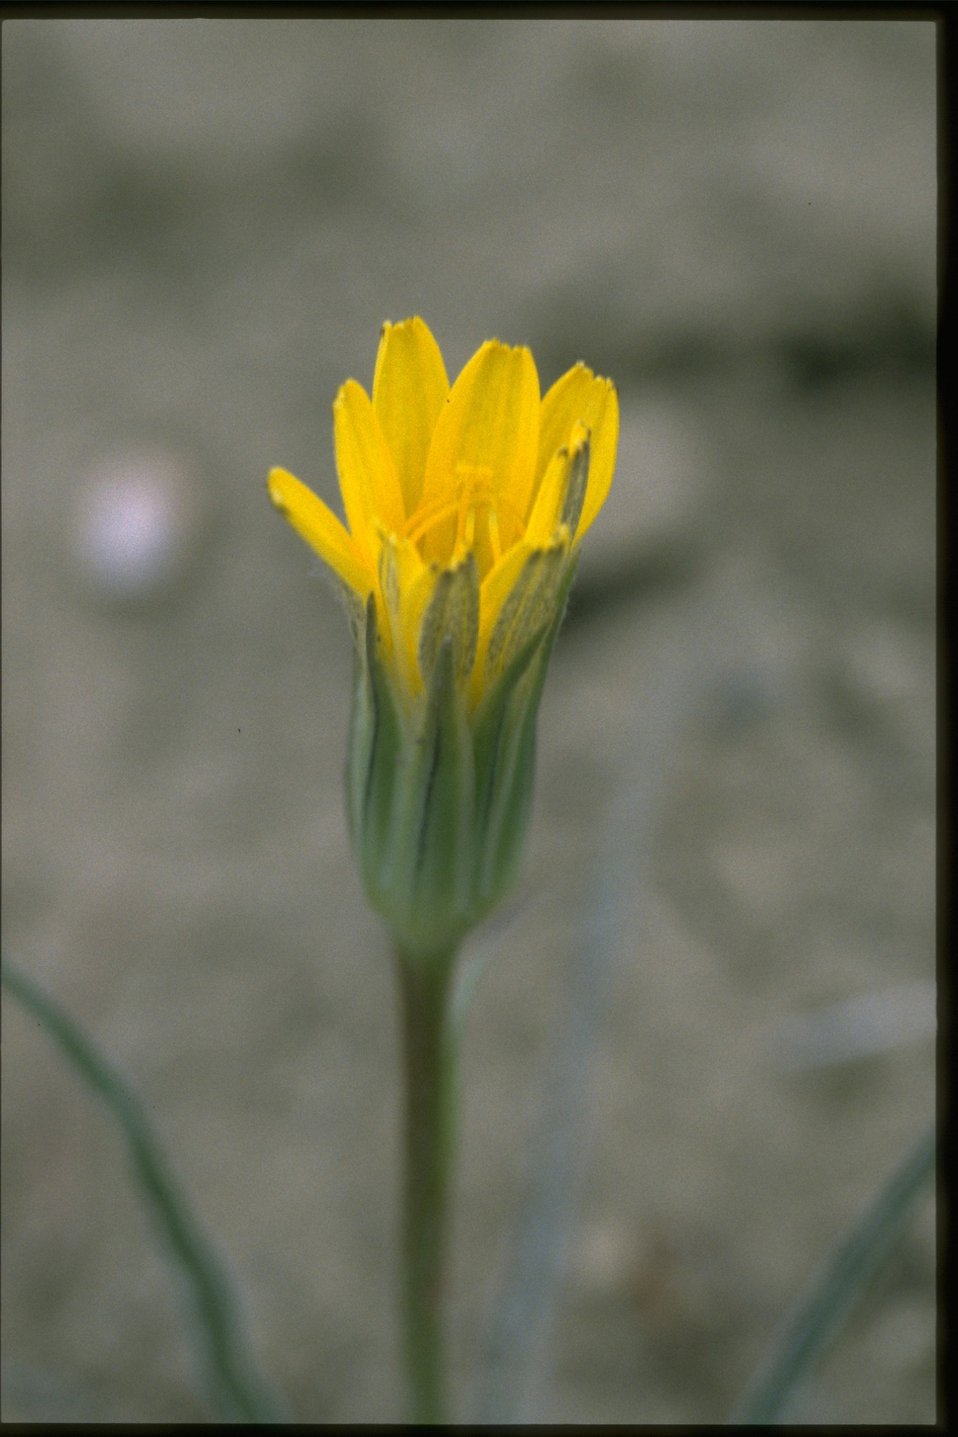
Closeup shot of False dandelion, Agoseris glauca.